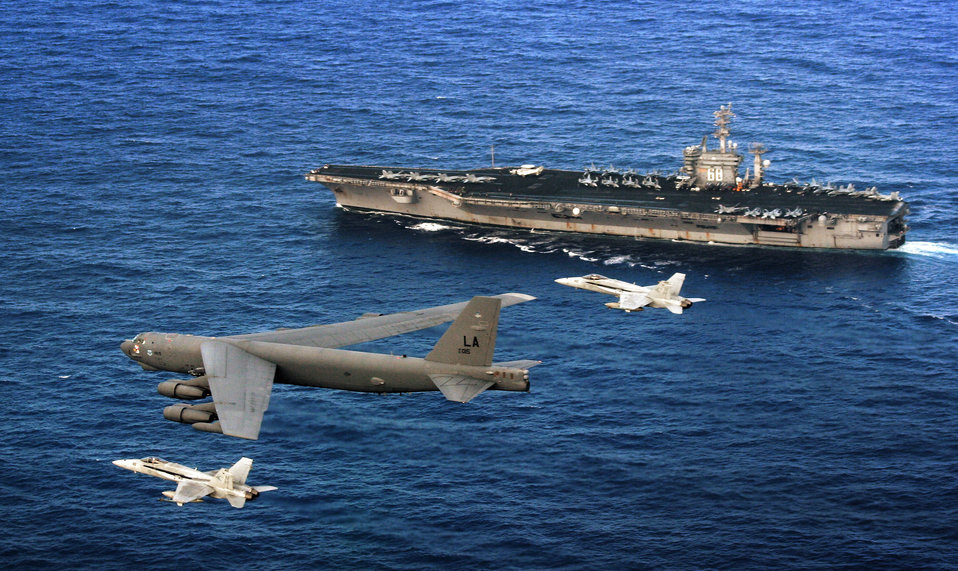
Show of strength

A B-52 Stratofortress flies past the USS Nimitz as two U.S. Navy F/A-18 Hornets intercept. The B-52 is from the 96th Expeditionary Bomb Squadron deployed to Andersen Air Force Base, Guam.